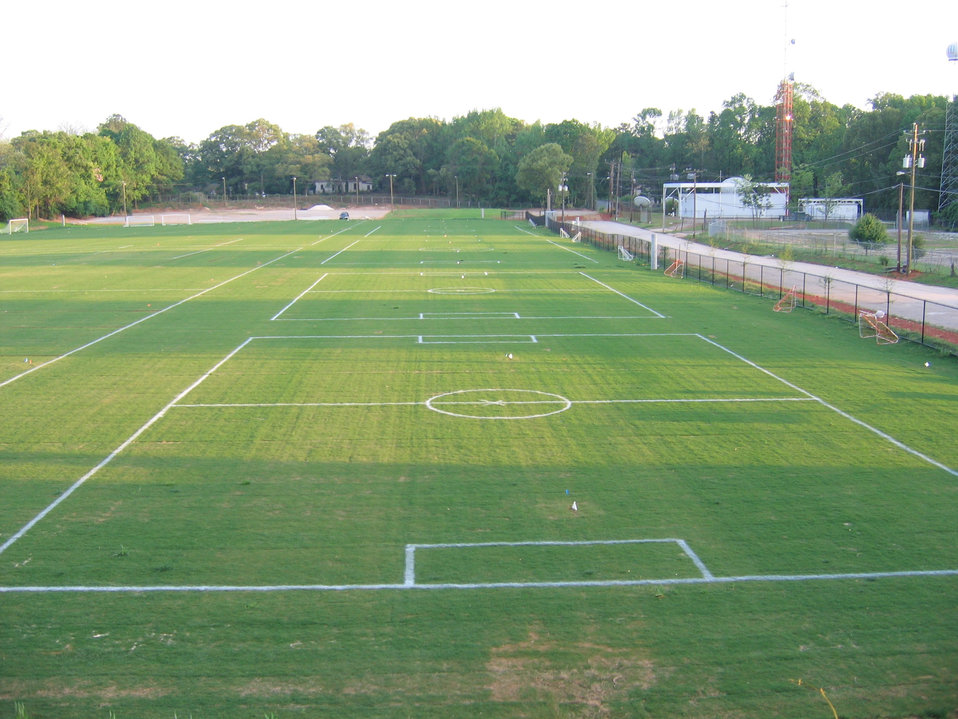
AFTER: Atlanta, GA

The site has been transformed into a soccer field that will not only increase nearby property values, but will also help address concerns about asthma and obesity.